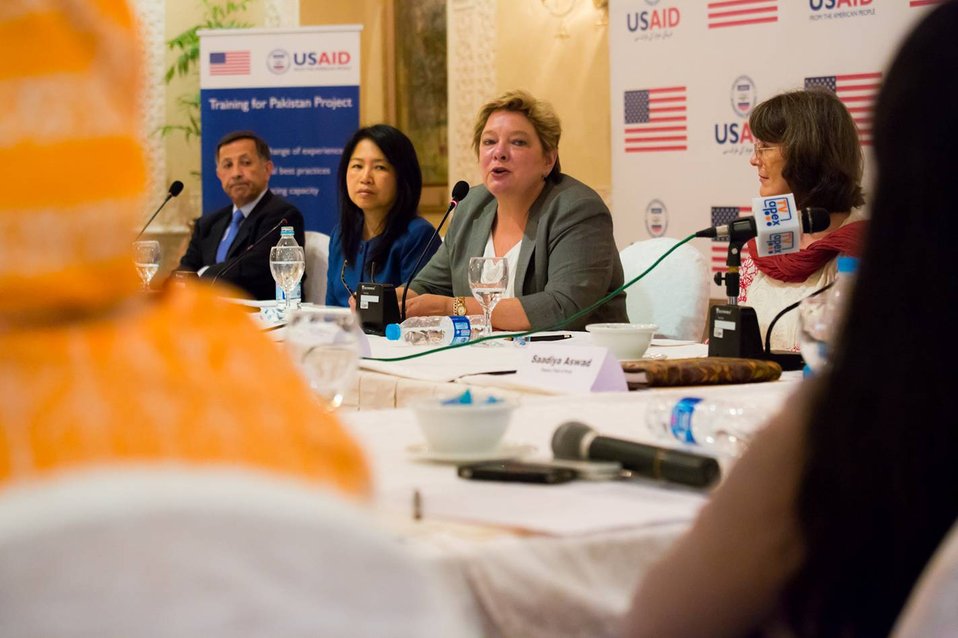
US-funded Study Tour Offers New Ideas for Addressing Gender-Based Violence

Islamabad, September 6, 2012 - USAID Deputy Mission Director Karen Freeman along with other attendees at the event.